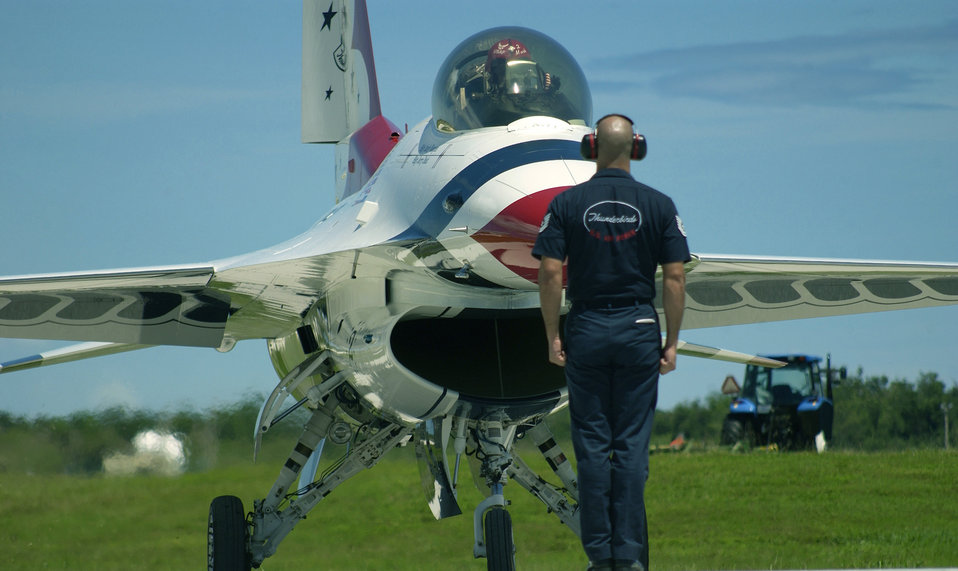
Overdue visit

ANDERSEN AIR FORCE BASE, Guam -- Tech. Sgt. Brian Plauche guides a taxiing U.S. Air Force Thunderbirds demonstration aircraft after the team landed here Sept. 9. This is the first time in a decade the USAF Thunderbirds demonstration team has visited Guam. The Thunderbirds will perform during an air show held Sept. 12. Sergeant Plauche is assigned with the U.S. Air Force Thunderbirds.